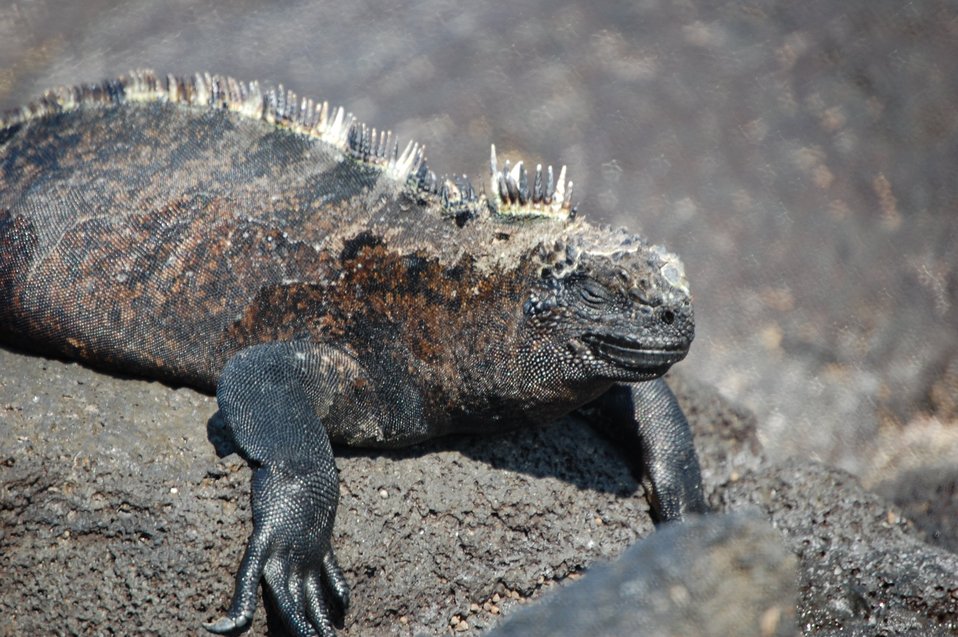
Marine iguana.